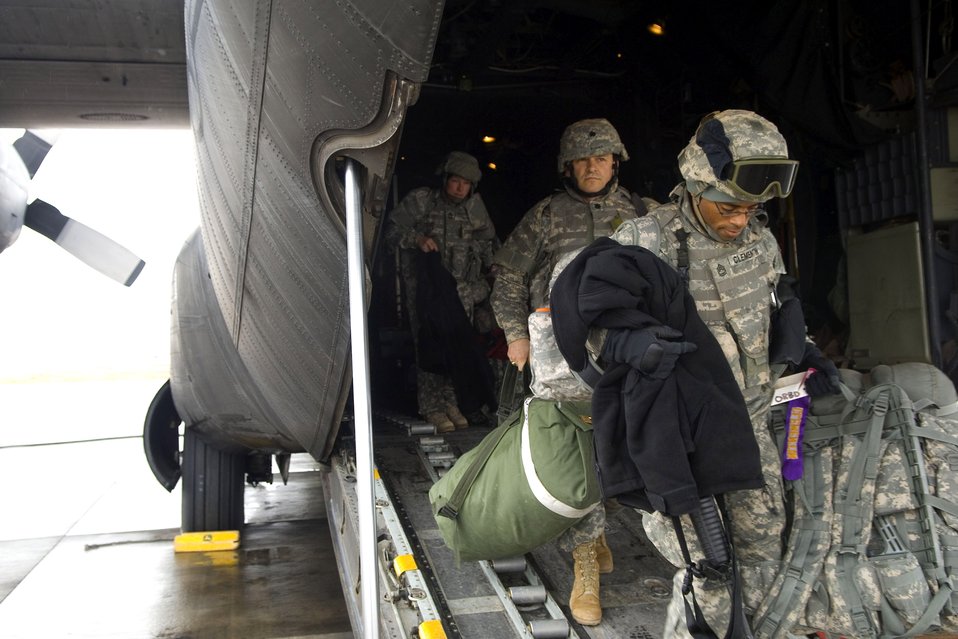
Tactical airlift key to winning war on terrorism

Airmen and Soldiers exit a C-130 Hercules Jan. 11 at a Southwest Asia air base. The C-130 mission in Iraq is to provide precision air delivery of supplies and personnel throughout the theater of operations.